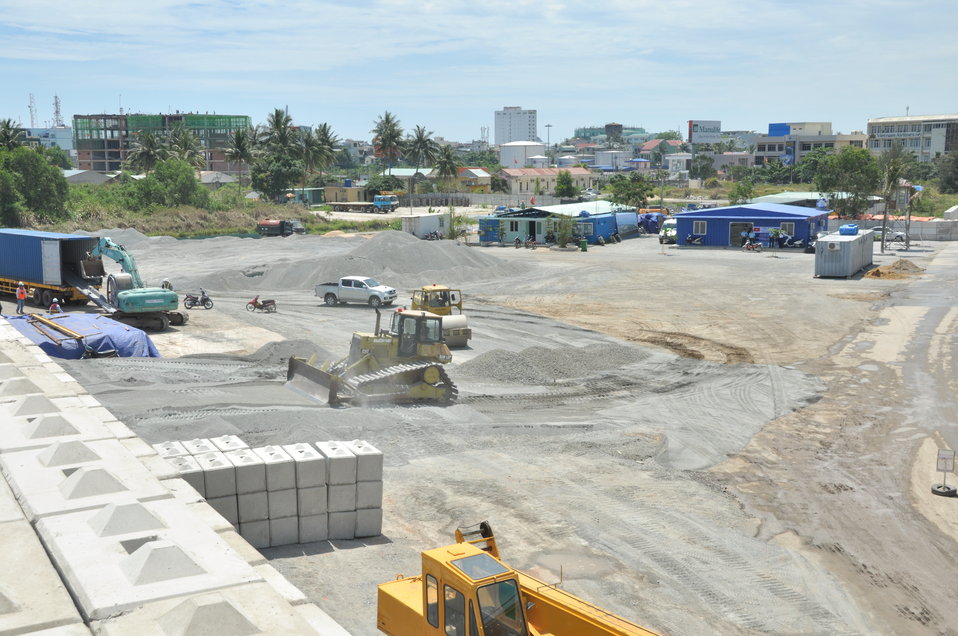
Site construction at the Environmental Remediation of Dioxin Contamination at Danang Airport

Progress at the Danang Airport remediation site
April 23, 2013